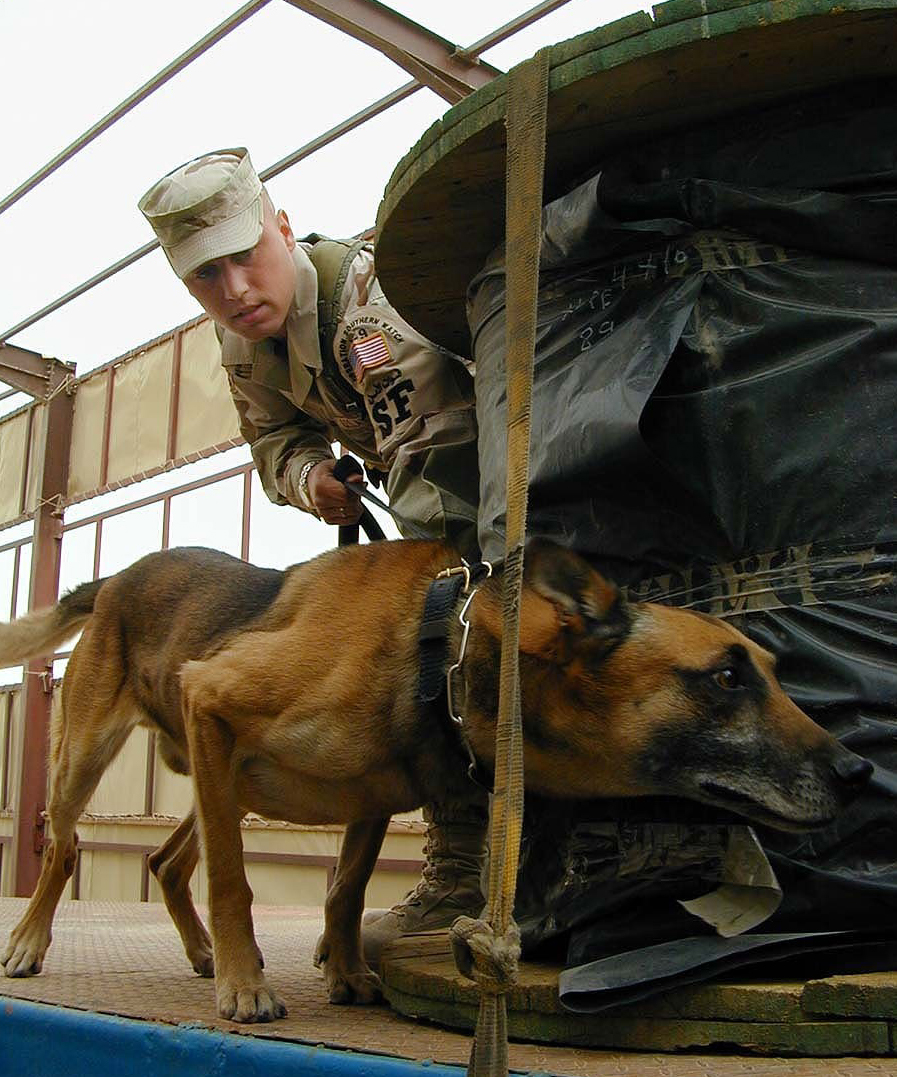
Wells and Kastor

OPERATION IRAQI FREEDOM -- Senior Airman Donnie Wells, 363rd Expeditionary Security Forces Squadron, watches as Kastor, a Belgian Malinois military working dog, sniffs for any hazardous materials or explosives among cable rolls aboard a flatbed trailer coming on-base at a forward location. Both Wells and Kastor deployed together from the 99th Security Forces Squadron, Nellis Air Force Base, Nev.